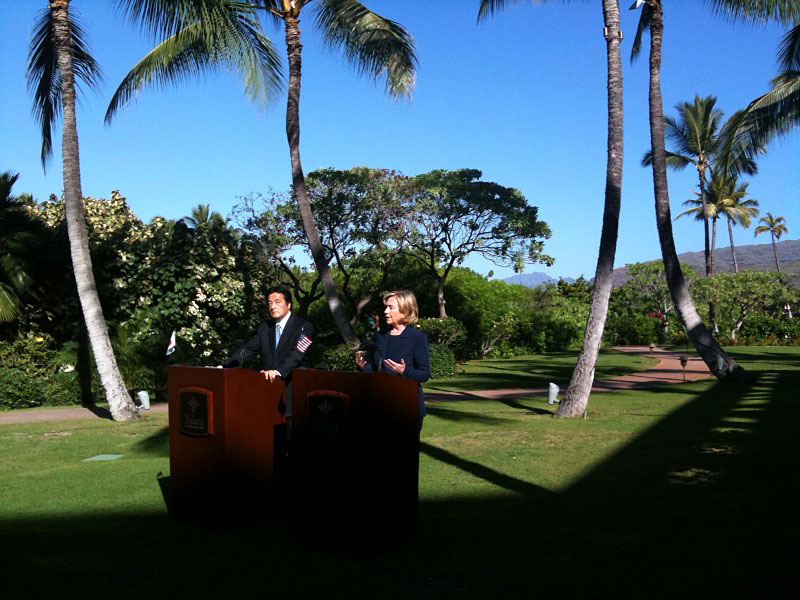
Secretary Clinton With Japanese Foreign Minister Okada

U.S. Secretary of State Hillary Rodham Clinton meets with Japanese Foreign Minister Katsuya Okada, Honolulu, Hawaii, Jan. 12, 2010.